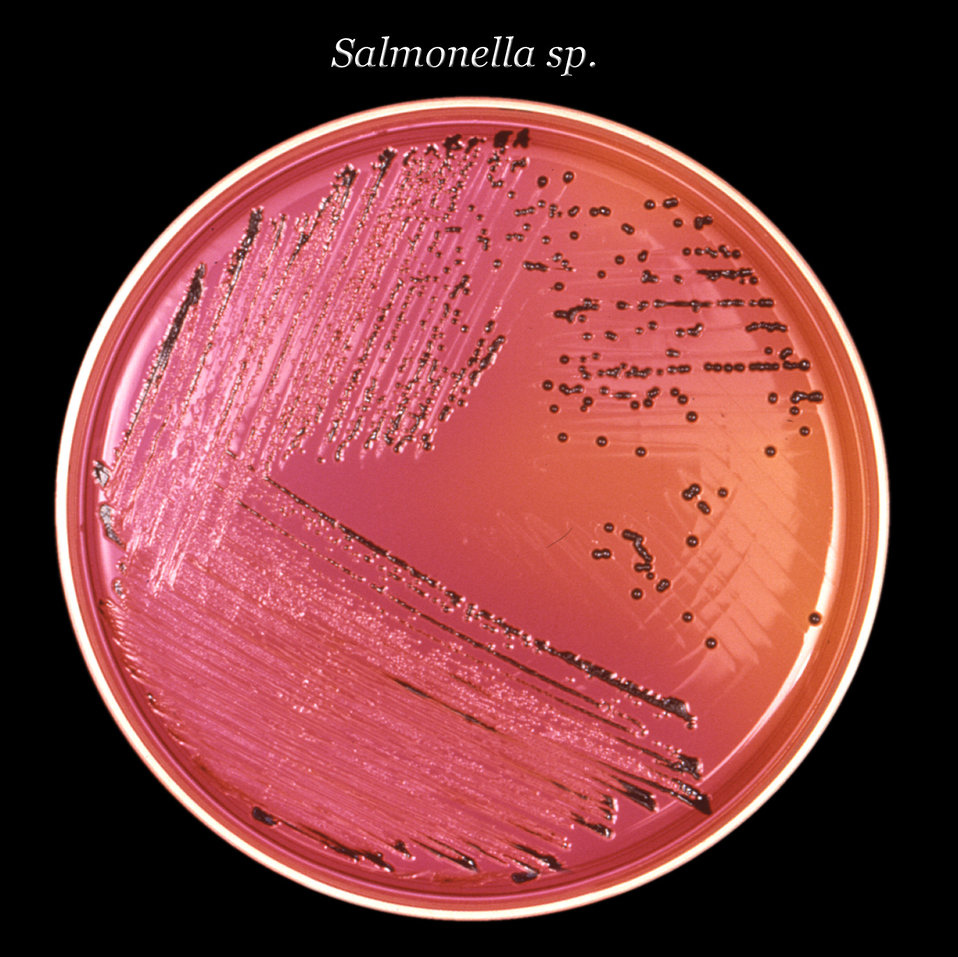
After 24 hours, this inoculated XLD agar culture plate cultivated colonial growth of Gram-negative, rod-shaped and facultatively anaerobic Salmonella sp. bacteria.